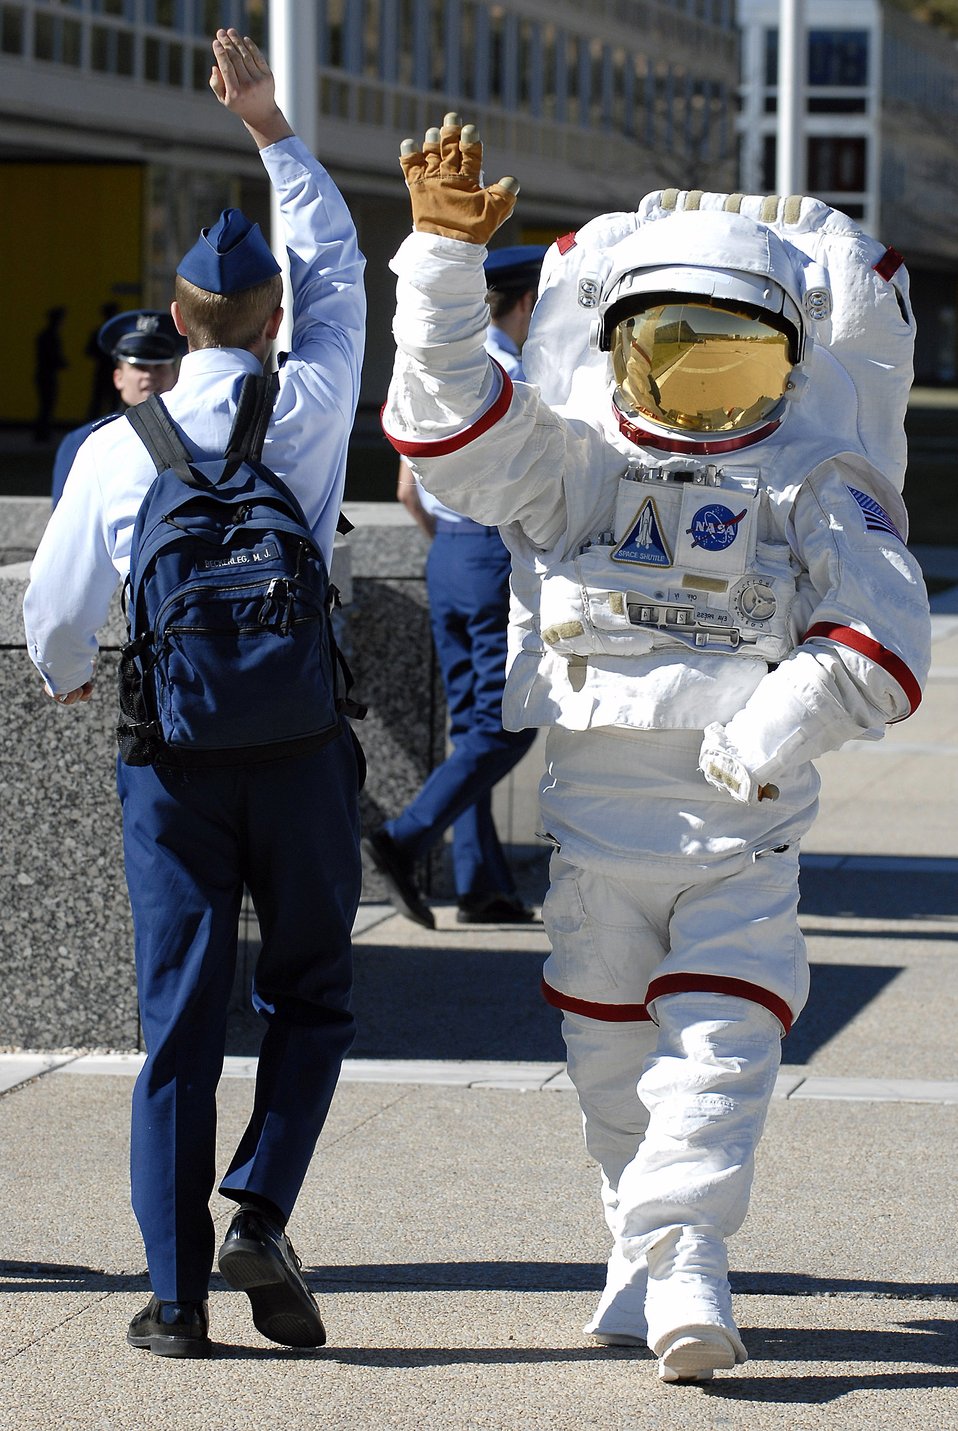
High five

U.S. Air Force Academy Cadet Matthew Beckerleg high fives